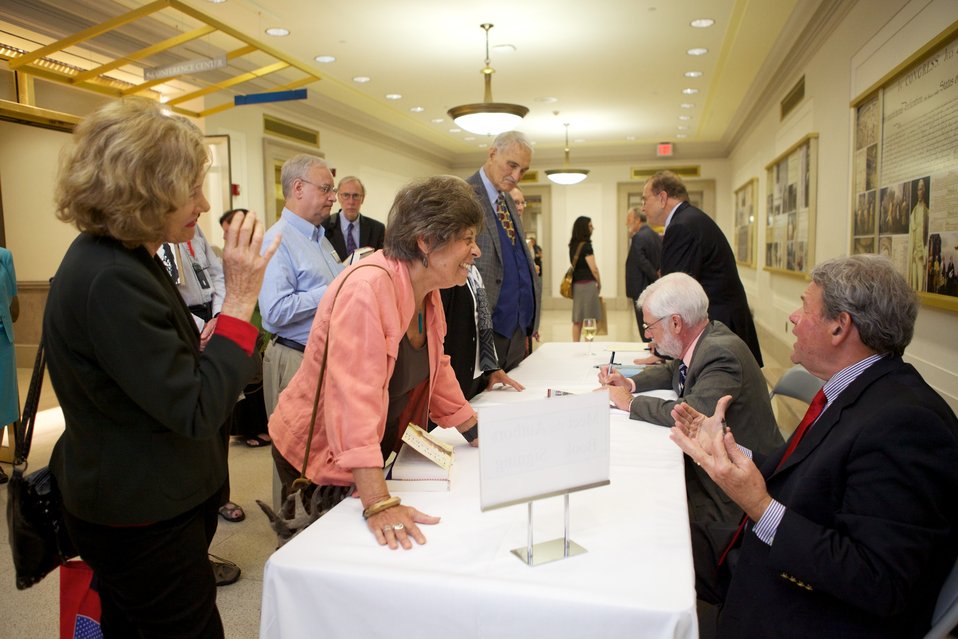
A Nation of Immigrants: How They Shaped America